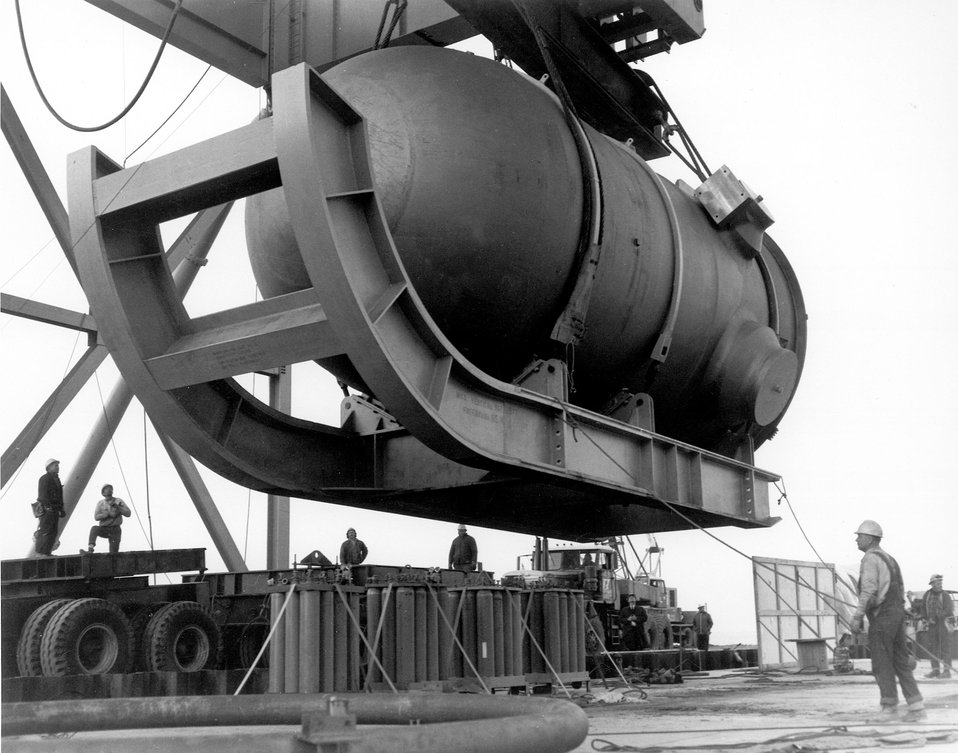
The 42-ton reactor vessels for the first unit at Baltimore Gas and Electric's Calvert Cliffs Nuclear Power Plant being unloaded from the barge. Circa 1971.